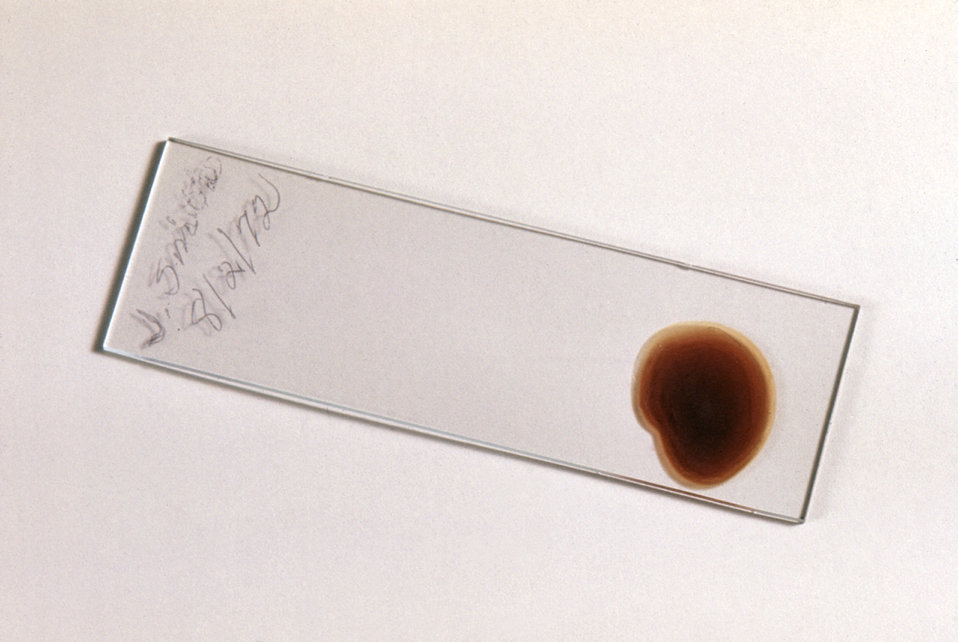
This prepared slide offers an example of the appearance of a 'satisfactory' thick film blood smear.